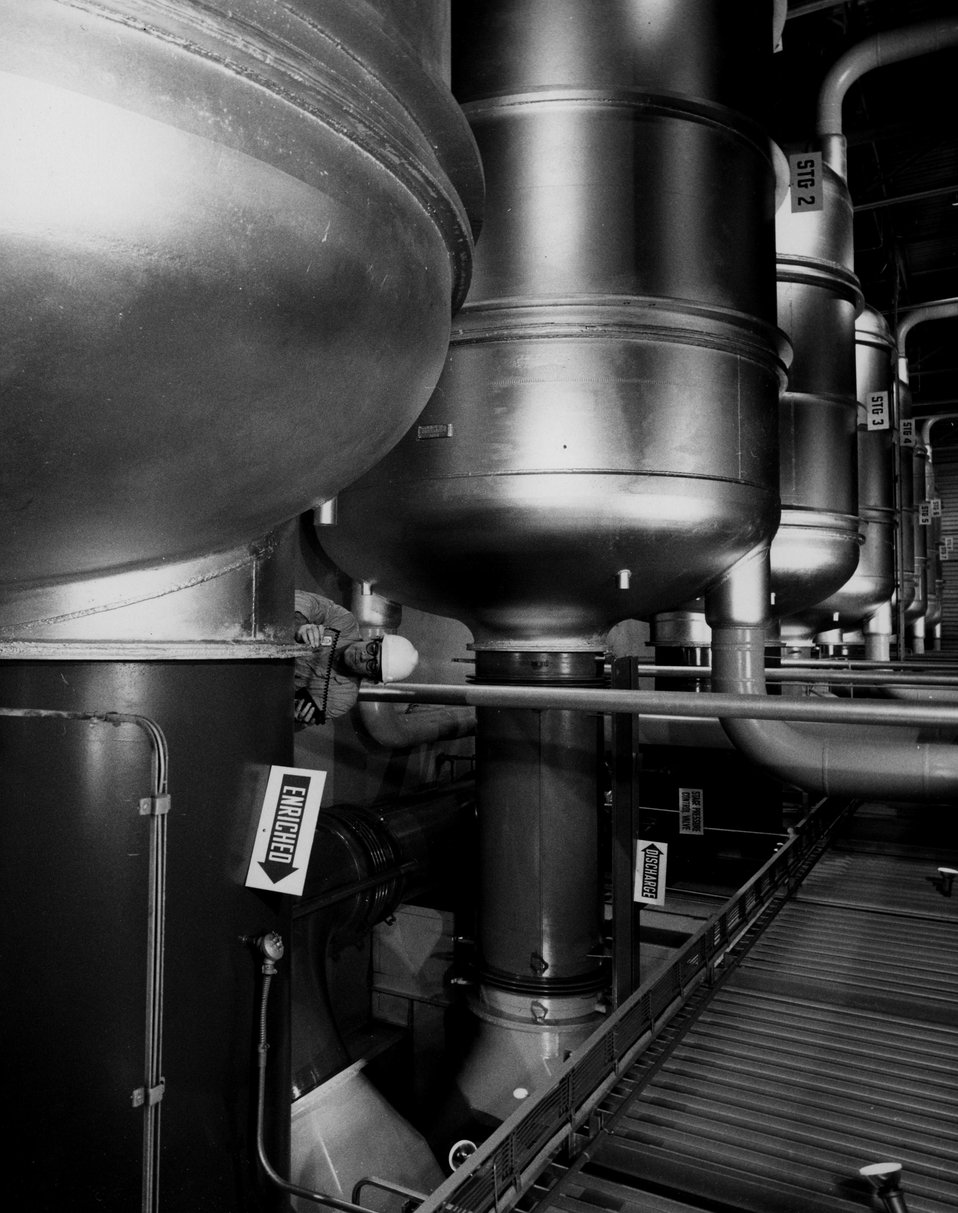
Worker at the Oak Ridge Gaseous Diffusion Plant uses special leak-detection device to examine large piping of process equipment at the plant. c. 1974